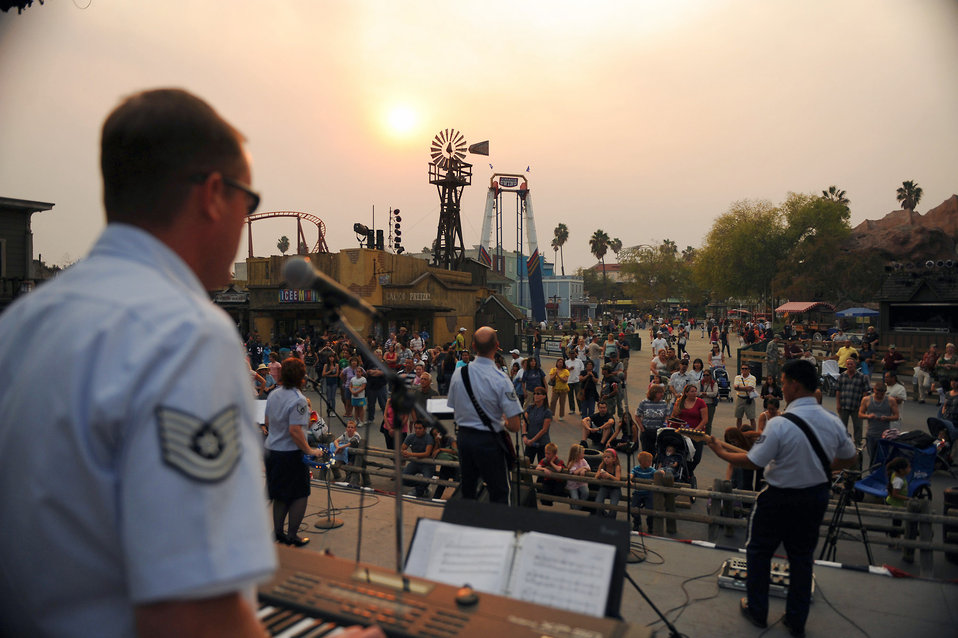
Bands spread Air Force message through music

Members of the Air National Guard Band of The Southwest perform Nov. 15 at Knott's Berry Farm in Los Angeles. The band is performing during Air Force Week Los Angeles, which is an event designed to educate the local population about the Air Force's capabilities and missions through various activities and exhibitions all over the Los Angeles area.